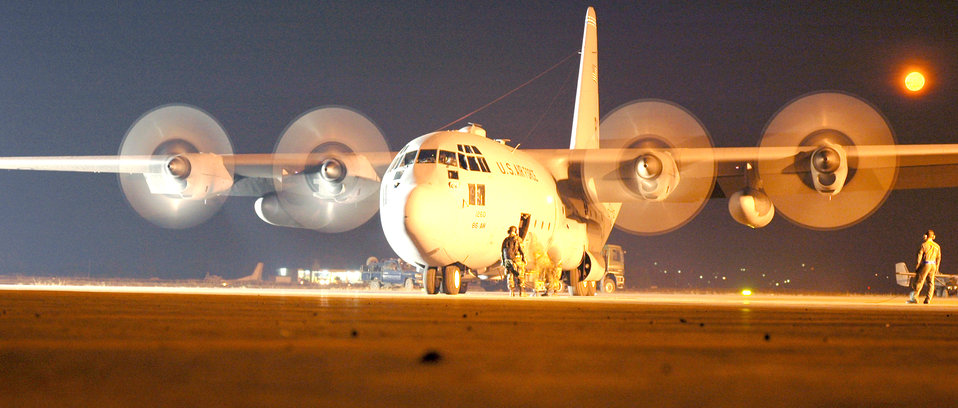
AMIS 2

KIGALI INTERNATIONAL AIRPORT, Rwanda - A C-130 Hercules prepares to take off in the early morning hours as members of the 86th Air Expeditionary Group work to get the plane in the air. The 86th Aircraft Maintenance Squadron Airmen are deployed from Ramstein Air Base, Germany.